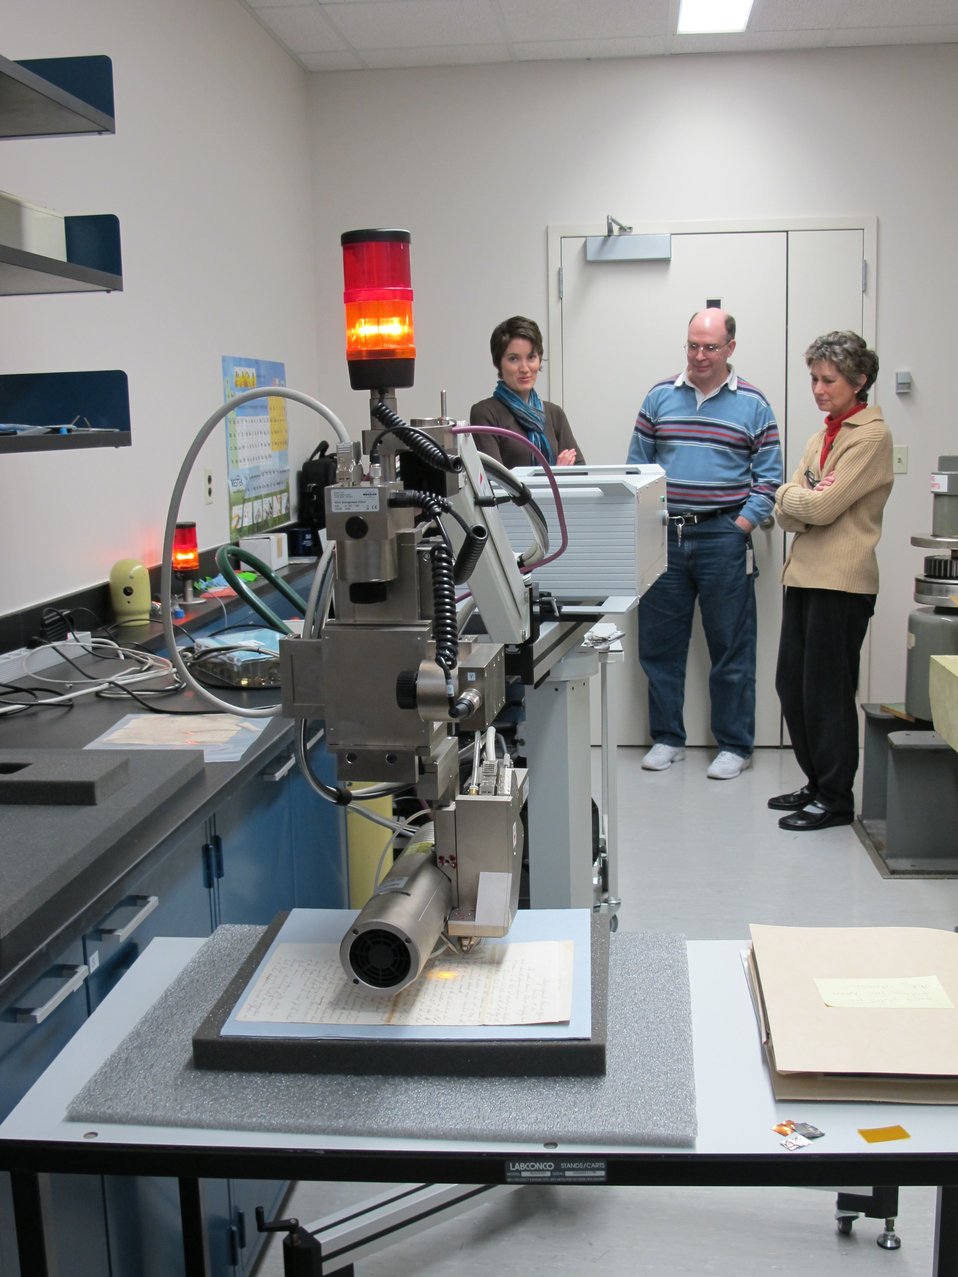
Mark Ormsby, Kathy Ludwig, and Sarah Raithel conduct XRF analysis of a forged date on a Lincoln Pardon; Location: Archives 2 - Conservation Testing Lab, College Park, MD